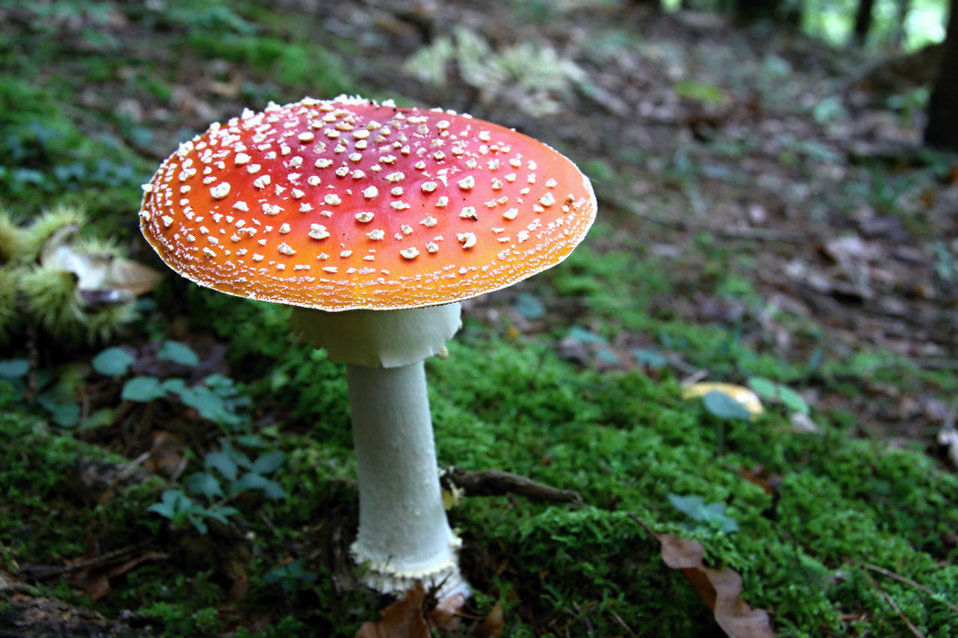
Red toadstool

Beautiful red toadstool - toxic.